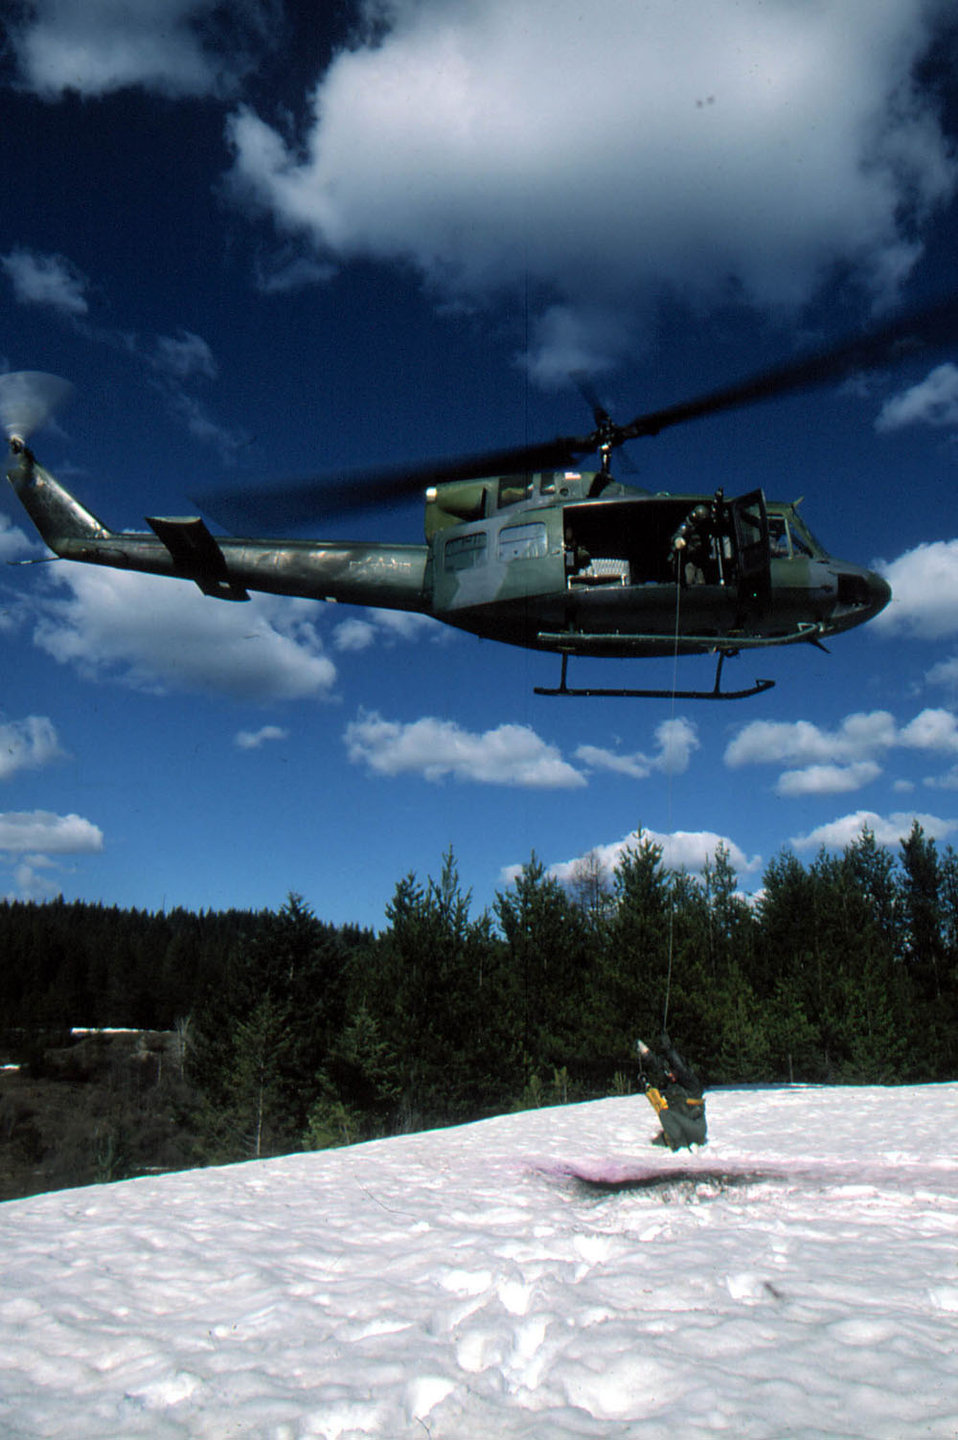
Huey

FILE PHOTO -- The UH-1N Huey is a light-lift Air Force utility helicopter used for support of Department of Defense contingency plans. The helicopter has a number of uses. Its primary mission includes airlift of emergency security and disaster response forces, medical evacuation, security surveillance of off-base movements of nuclear weapons convoys and test range areas during launch conditions. It is also used for space shuttle landing support, priority maintenance dispatch support, and search and rescue operations. Other uses include airlift of missile support personnel, airborne cable inspections and distinguished visitor transport.